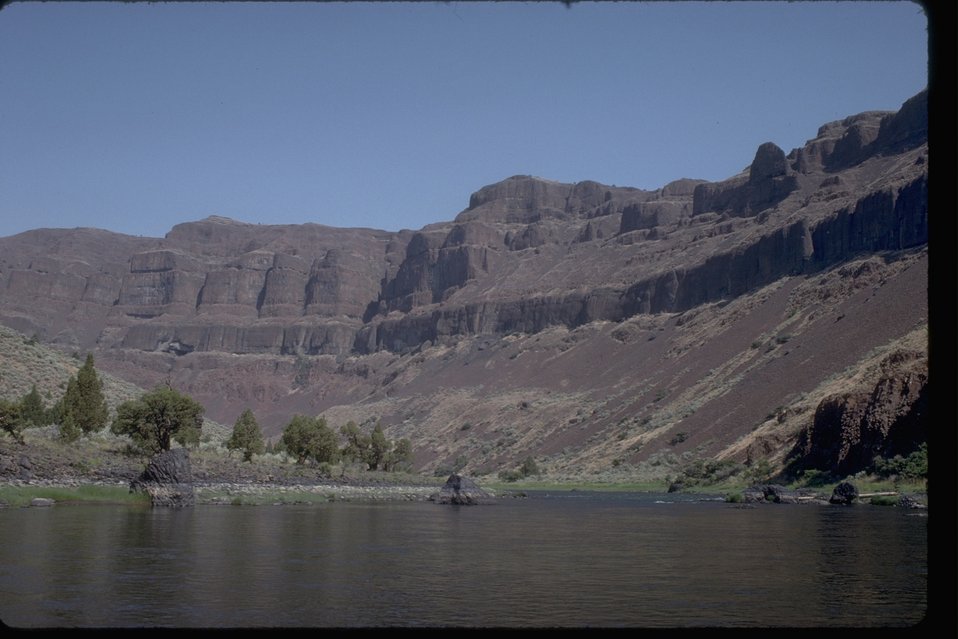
Looking up stream to Red Wall from 1 mile below Red Wall Camp.